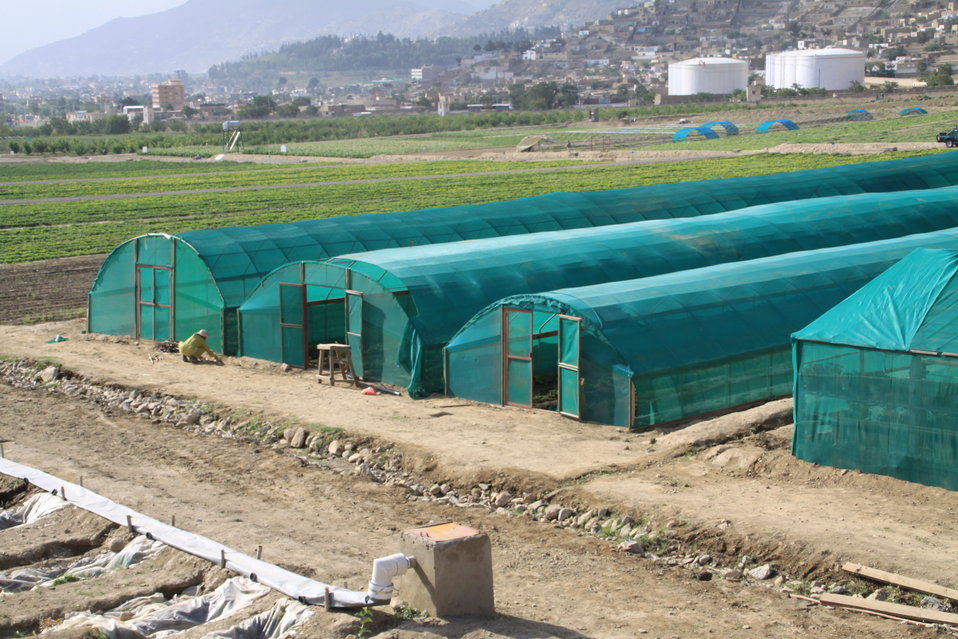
Badam Bagh Farm